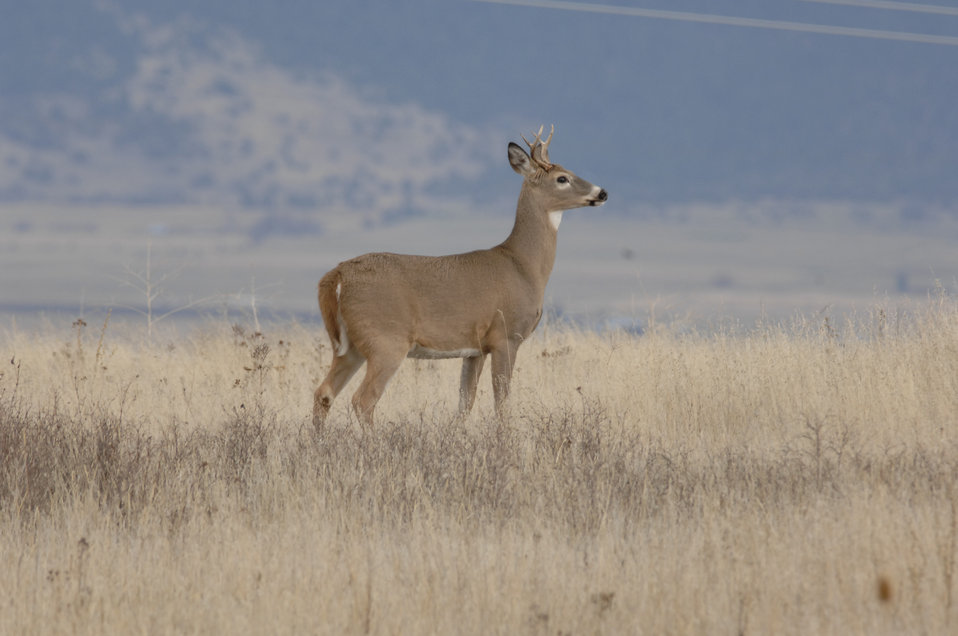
White tailed deer graze in the National Bison Range Wildlife Refuge in Montana on November 17, 2007. The U.S. Fish and Wildlife Service administers this refuge as part of the National Wildlife Refuge System. The refuge was established in 1908 and is one of the oldest Wildlife Refuges in the nation and was established to support a population of American bison. There are approximately 350-500 American bison. Other large wildlife found on the Range includes elk, whitetail and mule deer, pronghorn antelope, bighorn sheep and black bear.